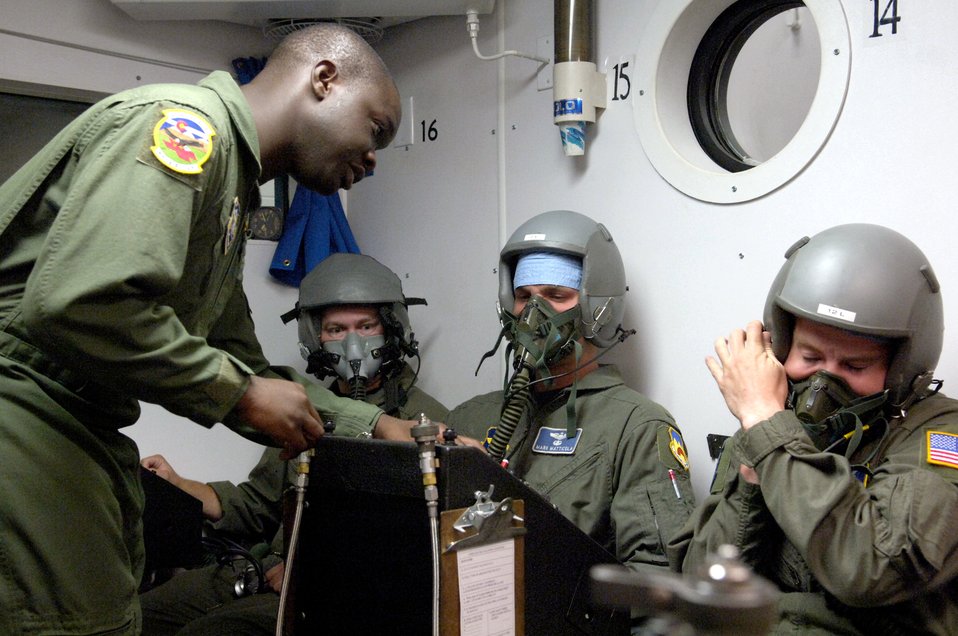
Physiological training crucial for aircrews

Staff Sgt. Abe Conteh checks his students' oxygen regulators before beginning physiological training at Peterson Air Force Base, Colo., on Aug. 10. Sergeant Conteh is an aerospace physiological technician with the 21st Aerospace Medical Squadron.